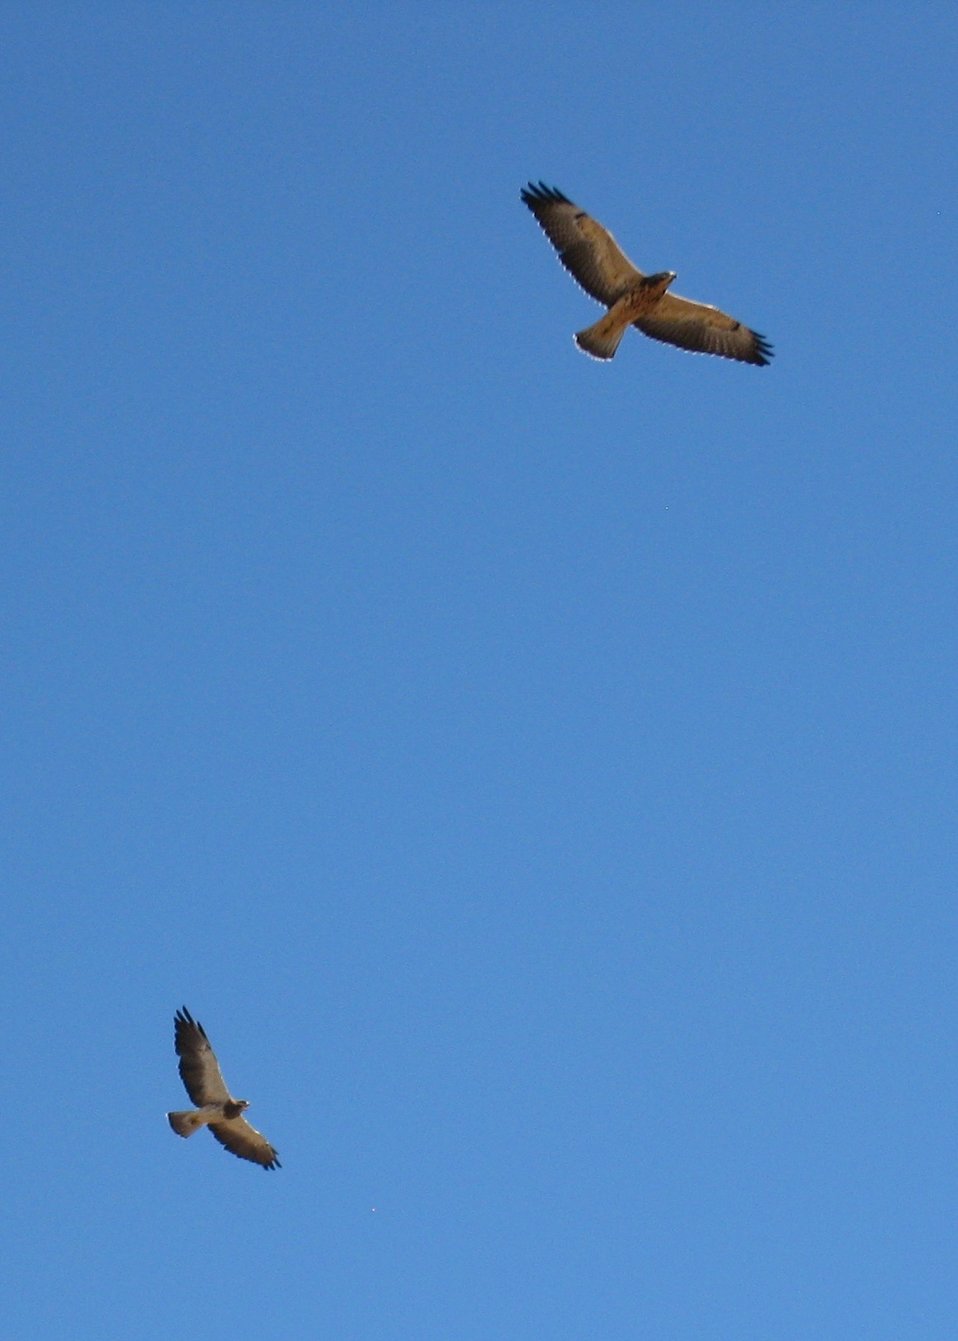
Hawks